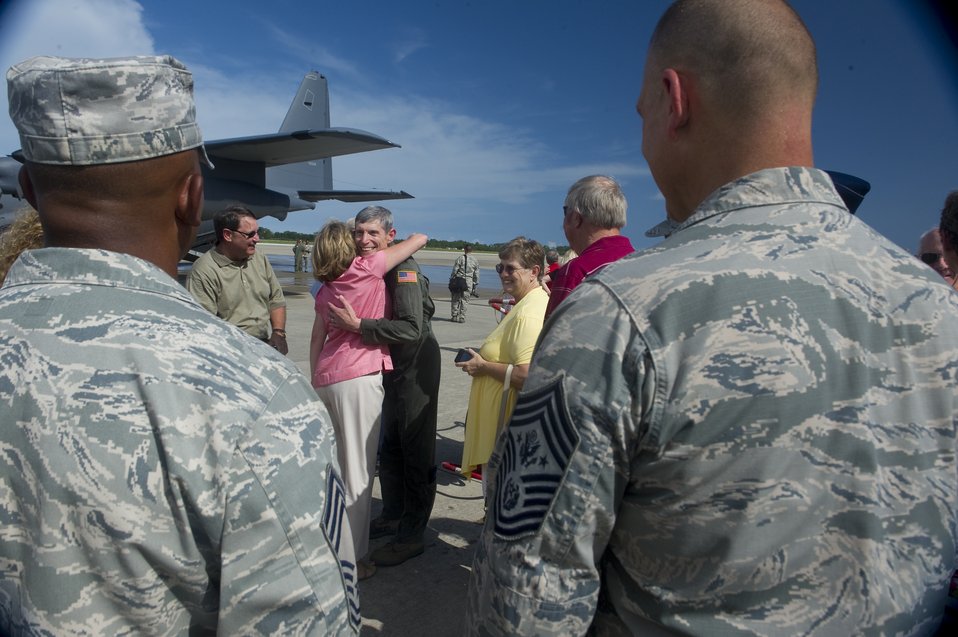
CSAF's

Air Force Chief of Staff Gen. Norton Schwartz celebrates with friends after his